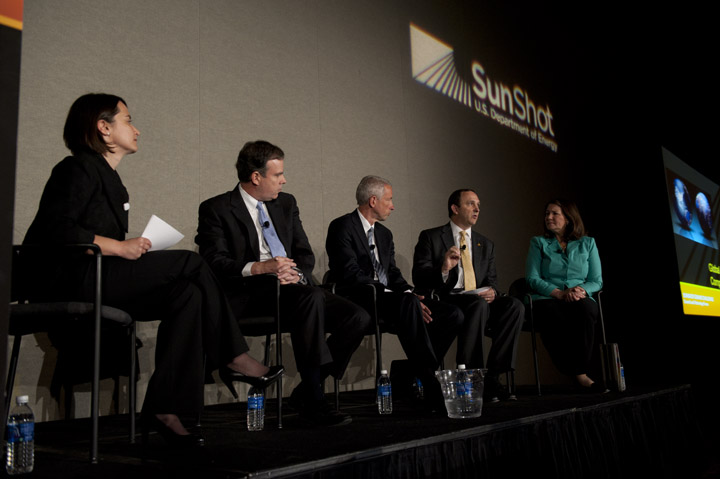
SunShot Global Competitiveness Panel

June 13, 2012- Members of the Global Competitiveness Panel speak the plenary session of the SunShot Grand Challenge Summit and Technology Forum in Denver, Colorado.